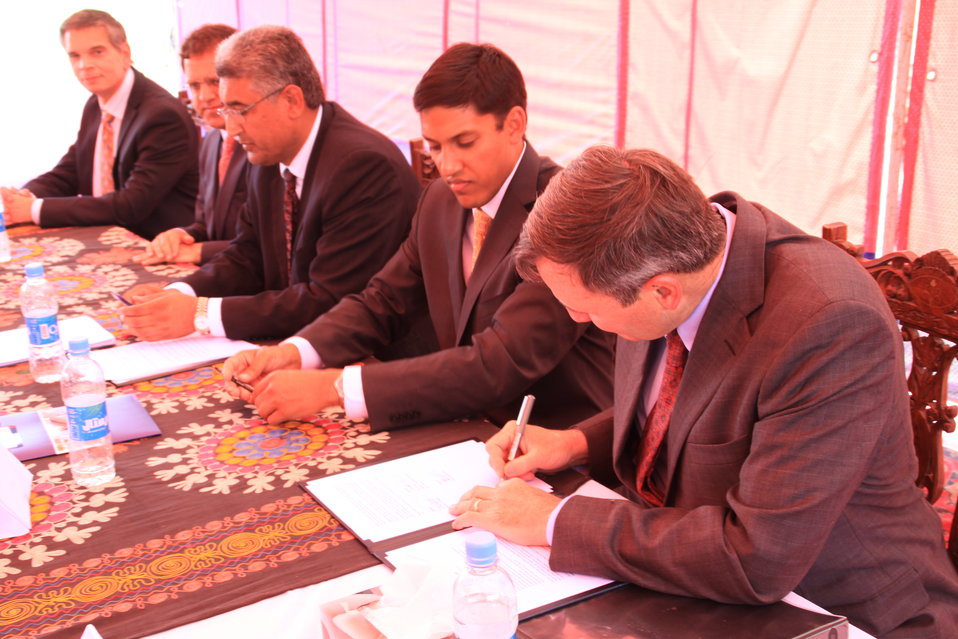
Badam Bagh Farm